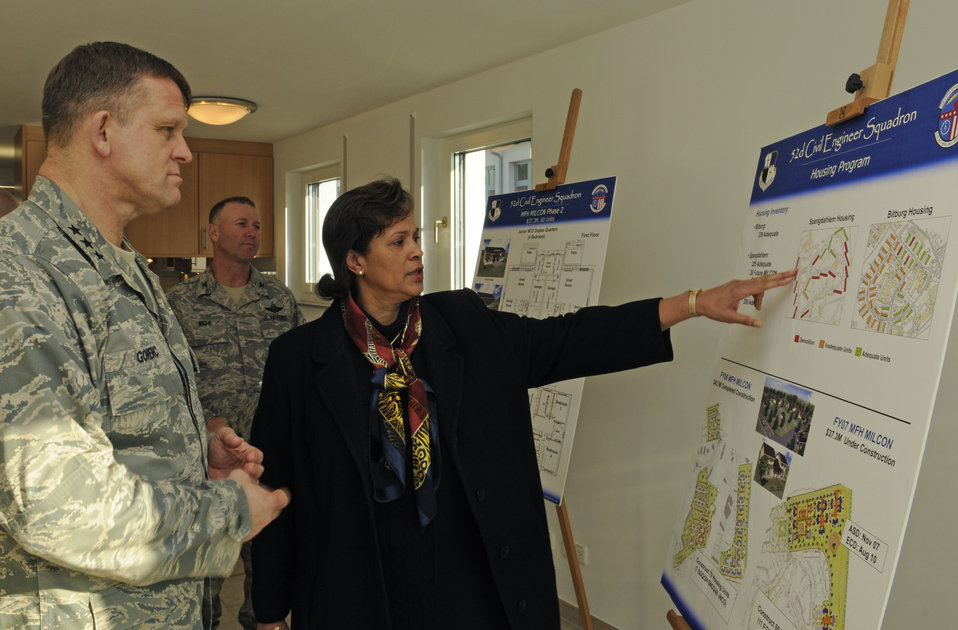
Changes at Spangdahlem

Denise Hastye from the 52nd Civil Engineer Squadron at Spangdahlem Air Base, Germany, shows Lt. Gen. Frank Gorenc, 3rd Air Force commander, the plan for relocating Spangdahlem AB famlies living at the Bitburg Annex to new Spangdahlem housing during his visit Feb. 18, 2010. General Gorenc toured one of the new junior NCO houses, which are two story duplexes containing four bedrooms, one-and-a-half baths and a full sized garage.